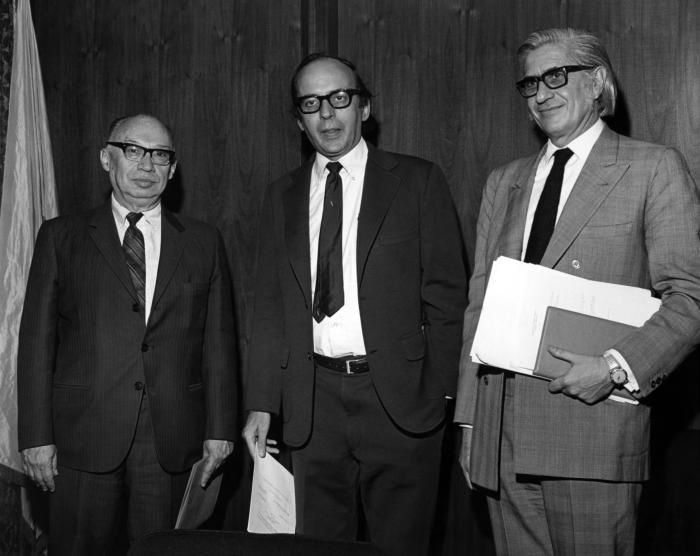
The public health administrators in this photograph met at the Centers for Disease Control and Prevention (CDC) during a Surveillance Course for the Pan-American Health Organization (PAHO) fellows. The course was held in the CDC's Atlanta offices from April 5, through December 10, 1971.